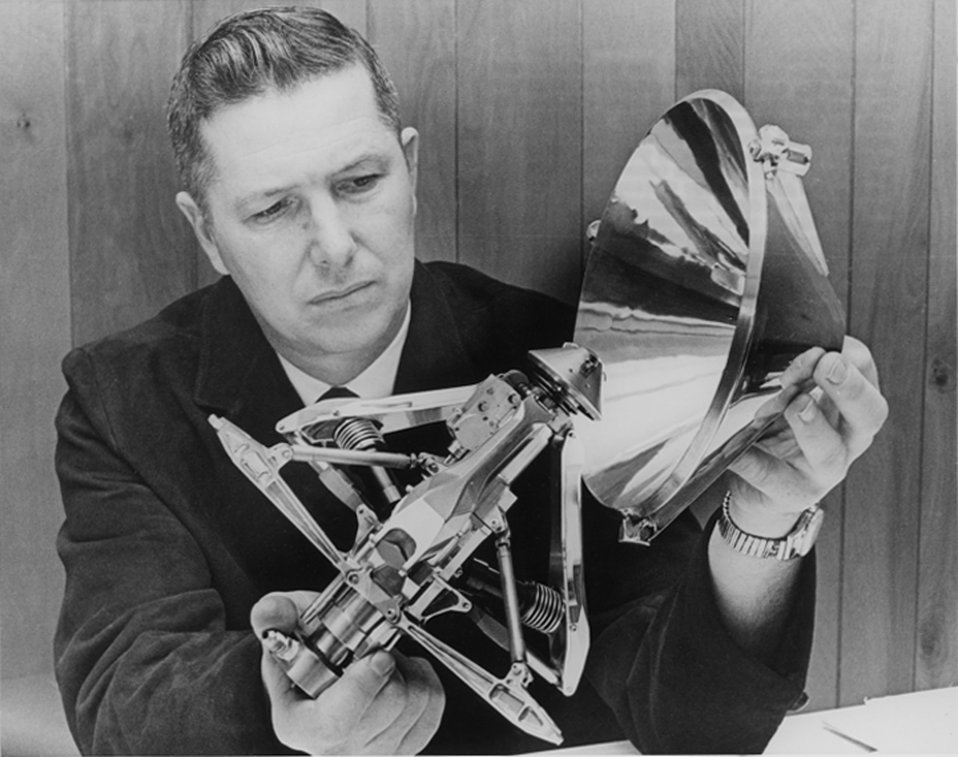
The AEC's Oak Ridge, TN Gaseous Diffusion Plant made the one-third scale model of the docking device which permits the Apollo astronauts to link their command ships with the Lunar Excursions Modules.